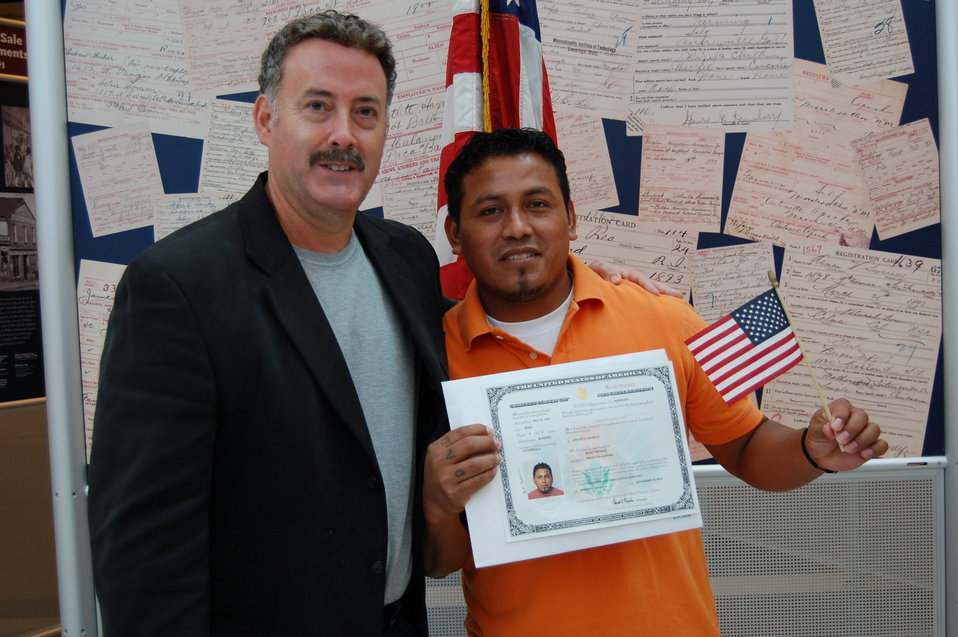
New Citizens